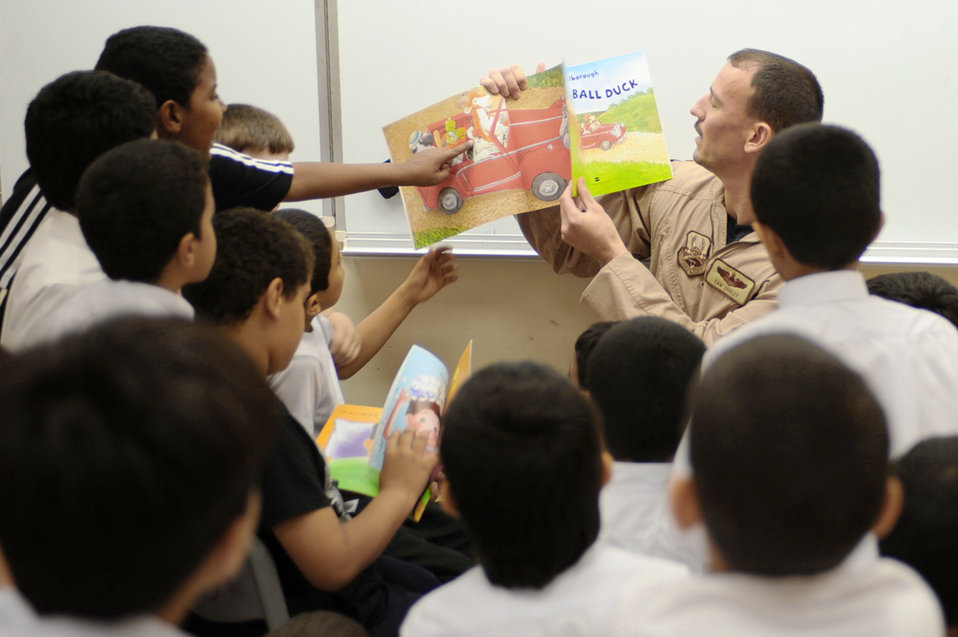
Airmen form Goodwill Amassador Team in Southwest Asia

Maj. Cam Shirley reads a book to a group of third-grade boys during